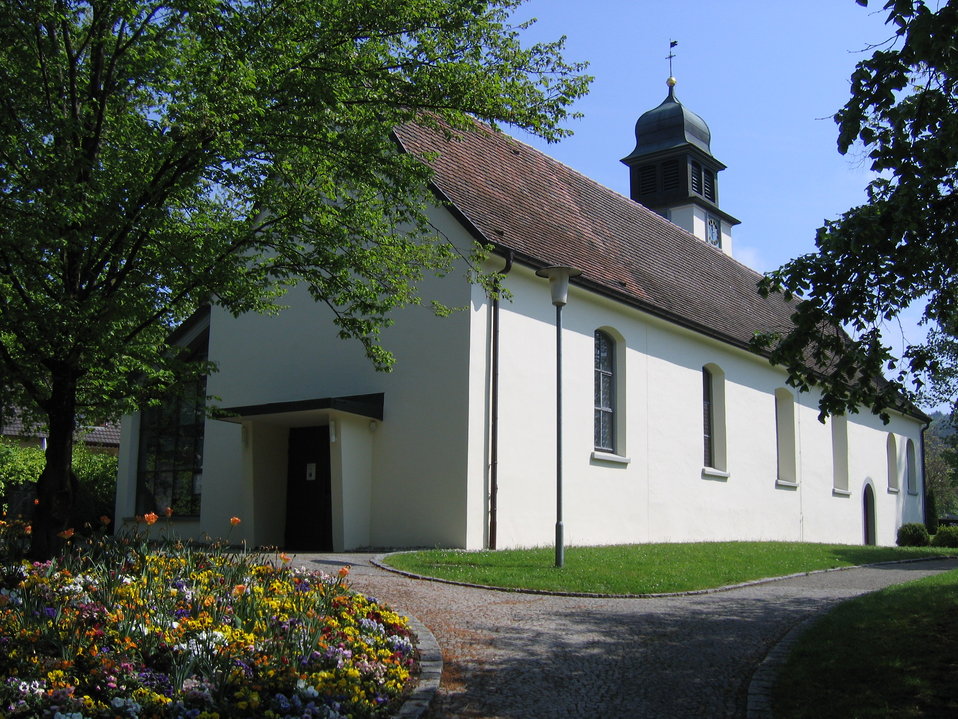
Deutsch: Deutschland - Baden-Württemberg - Bodenseekreis - Überlingen - Nesselwangen: Kirche 'St. Peter und Paul'